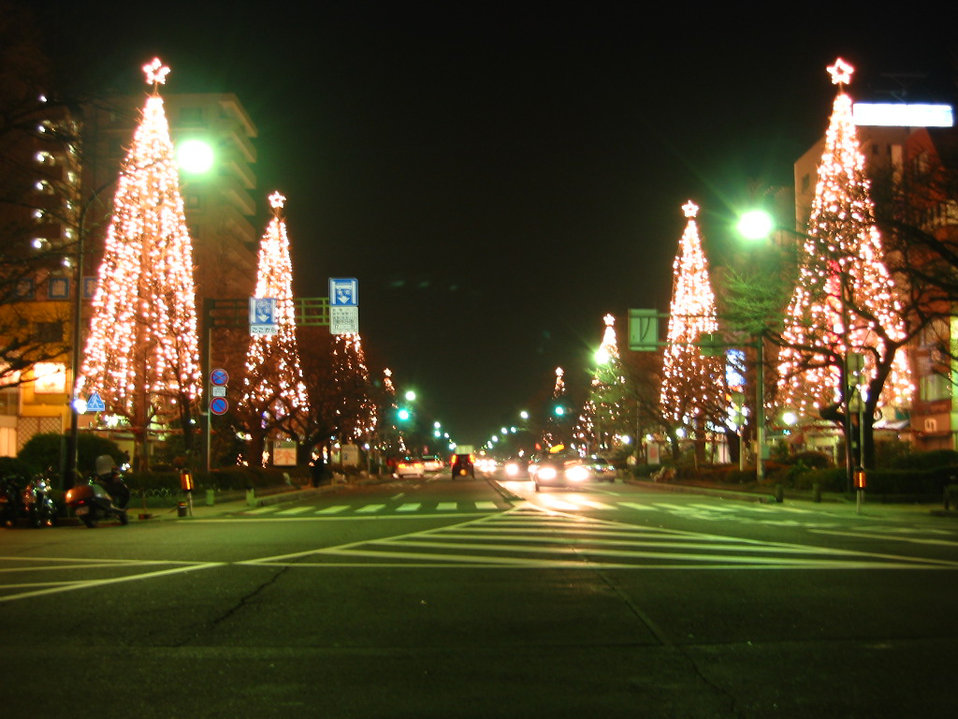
Daigaku avenue in Kunitachi, Tokyo, Japan.